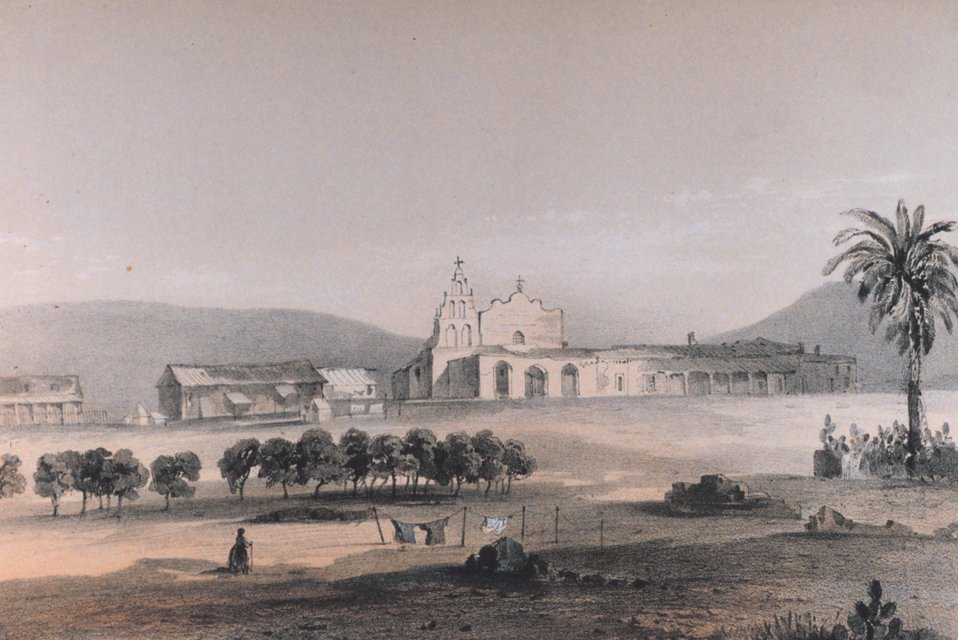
Mission of San Diego, Plate XII. In: Reports of Explorations and Surveys .... Vol. 5, p. 40. Commonly known as Pacific Railroad Surveys. Call Number F593 .U58.